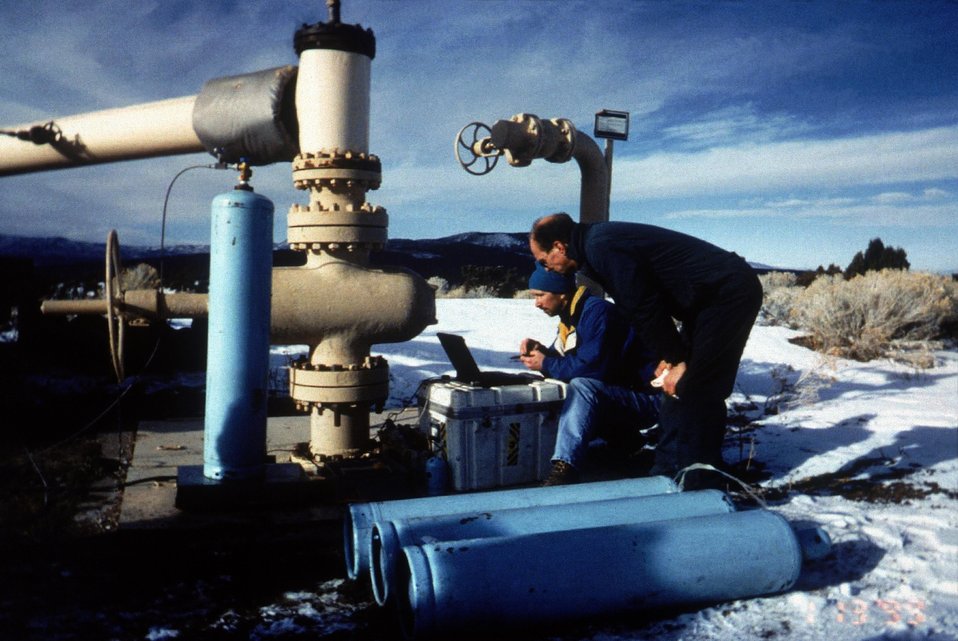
RESEARCHERS CONDUCTING A TRACER TEST ON THE SOUTHWEST GEYSERS WASTE WATER RECYCLING SYSTEM.

INJECTION FLOW FROM THE GEYSERS WASTE WATER RECYCLING SYSTEM IS TRACED THROUGH THE GEOTHERMAL RESERVOIR IN ORDER TO OPTIMIZE INJECTION FOR MAXIMUM STEAM PRODUCTION AND VERIFY IMPROVEMENTS IN GEOTHERMAL POWER PLANT CAPACITY. WITH DOE'S FUNDING THE UNIVERSITY OF UTAH'S ENERGY & GEOSCIENCE INSTITUTE IS DEVELOPING TRACER CHEMICALS THAT CAN BE INJECTED INTO A RESERVOIR TO TRACE THE FLOW OF WATER.